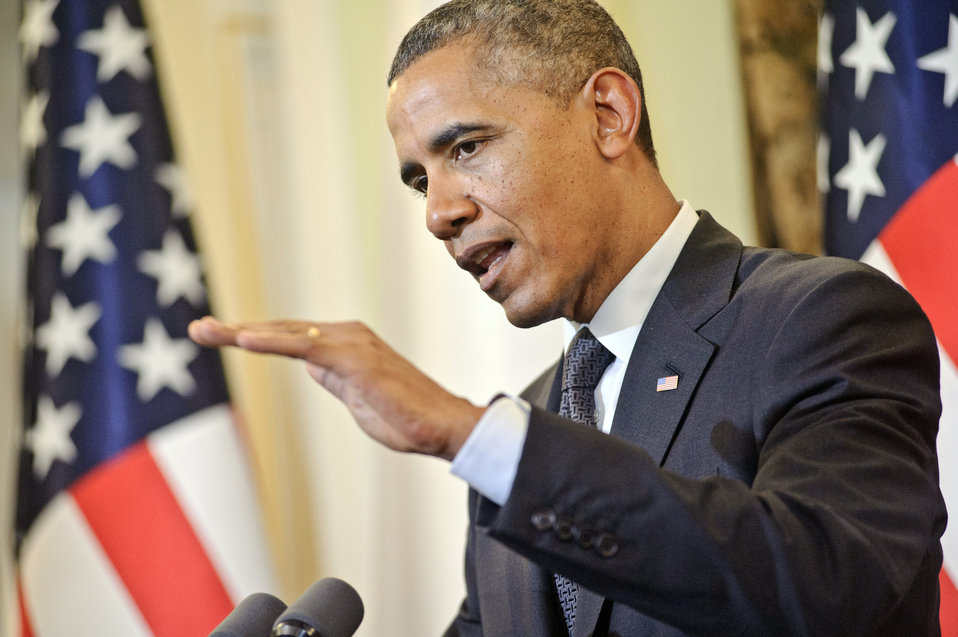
President Obama Responds to a Question During News Conference With Polish President Komorowski

U.S. President Barack Obama answers a question during a joint news conference with Poland's President Bronislaw Komorowski at Belweder Palace in Warsaw, Poland, on June 3, 2014. [U.S. Mission to Poland photo by Jakub Szymczuk]